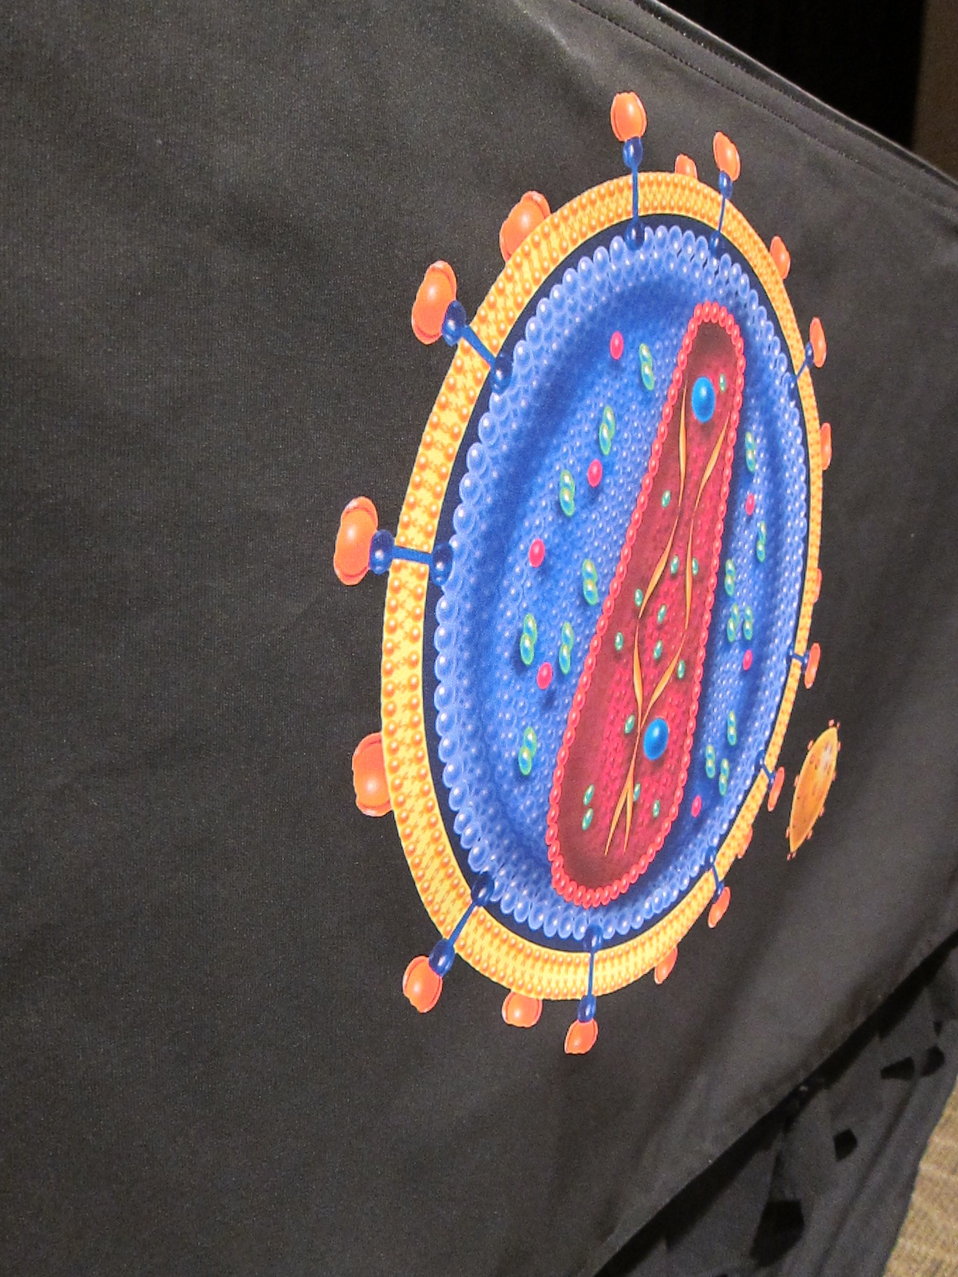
Croi Image